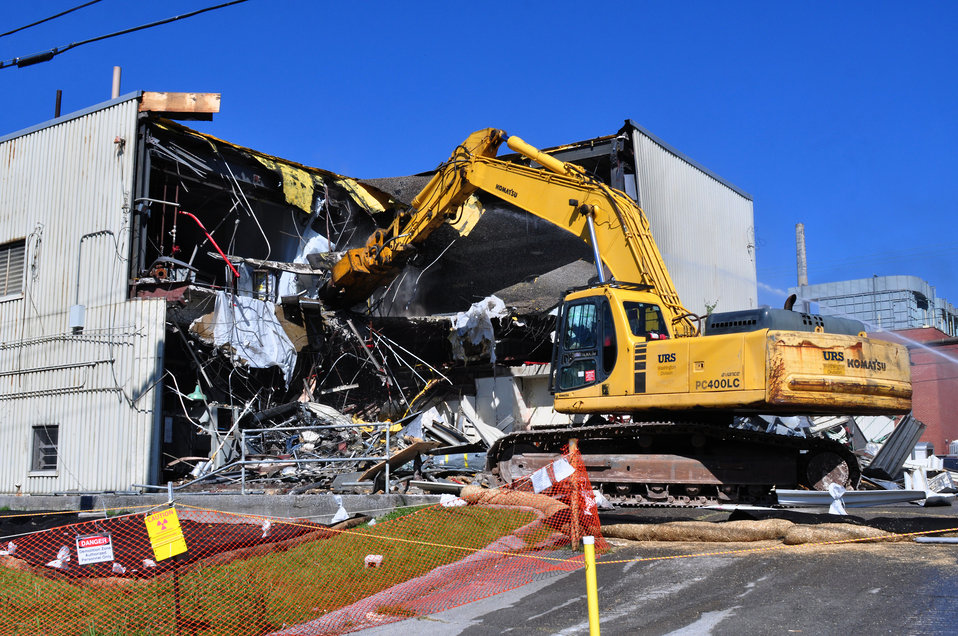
DandD work on Bld. 3508 at Oak Ridge National Lab.

12-077-31 DOE photo by Lynn Freeny

Oak Ridge Tennessee 4-13-2012